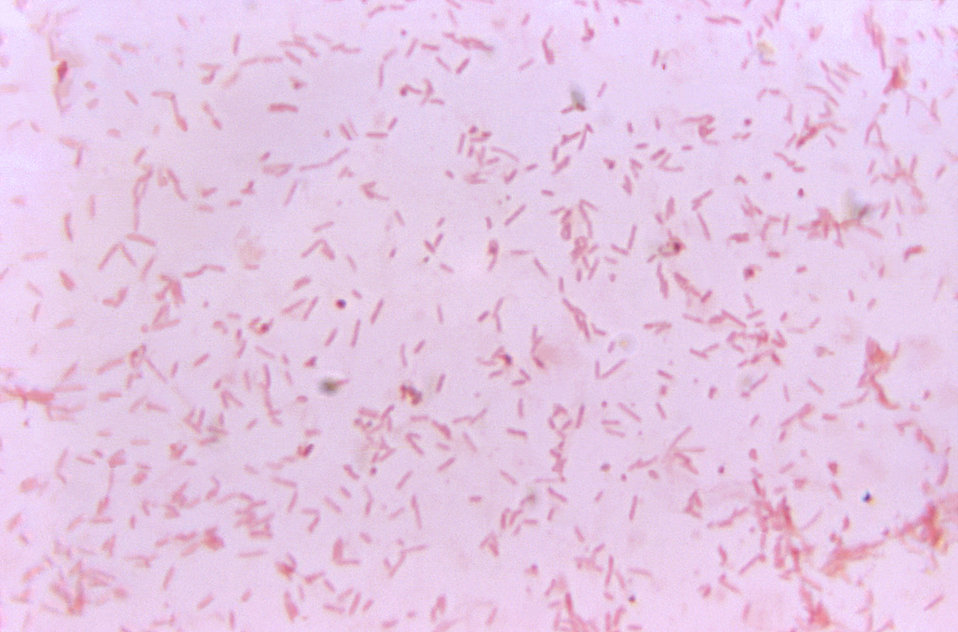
This photomicrograph shows Bacteroides fragilis after being cultured in a thioglycollate medium for 48 hours.